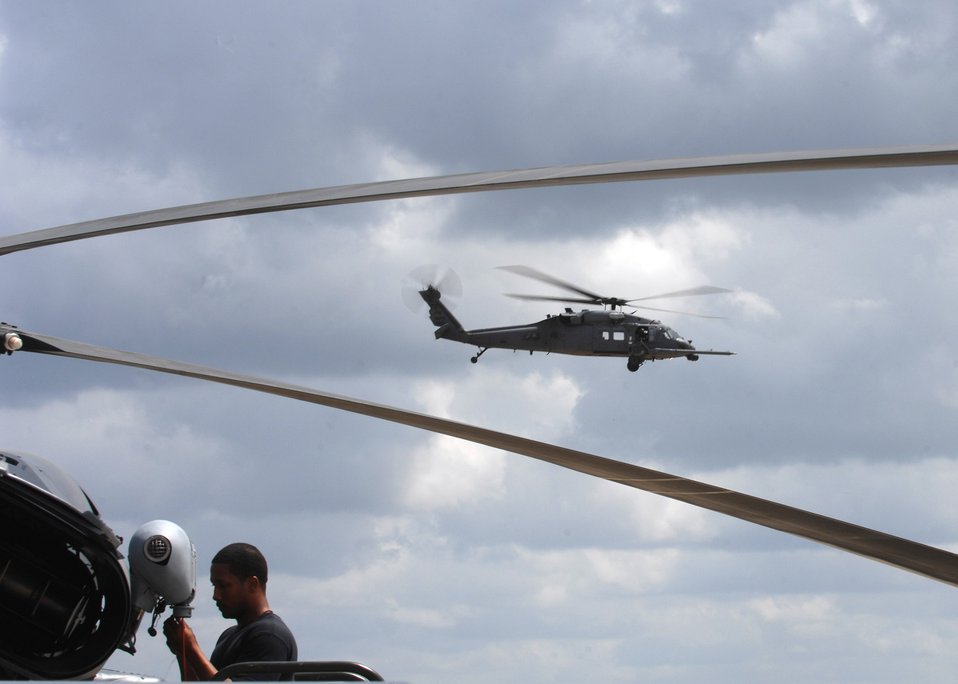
HH-60G Pave Hawk

Staff Sgt. Ray Campbell installs a hoist cable squib on an HH-60G Pave Hawk at Moody Air Force Base, Ga., April 1 while another flies by in the background. The primary mission of the Pave Hawk is to conduct combat search and rescue operations. Sergeant Campbell is an electrical and environmental technician with the 723rd Aircraft Maintenance Squadron.